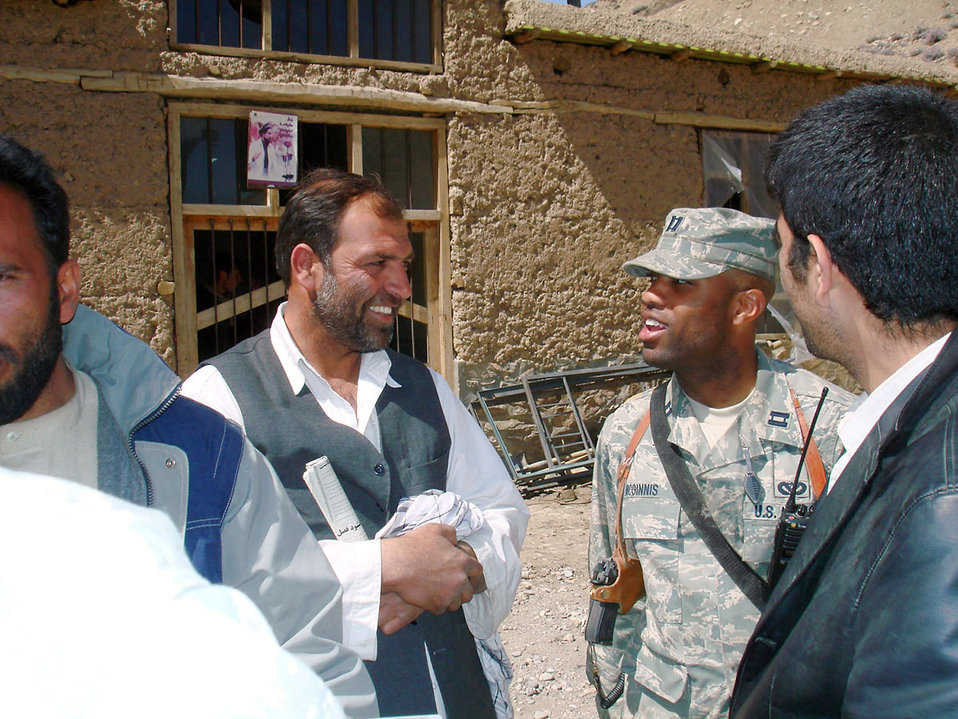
Air Force engineers are outside the wire every day

Capt. Kenneth McGinnis discusses foundation specifications for a schoolbook repository with the project's main contractor Haji Fada at the Khenj District Center April 1 in Afghanistan. The $220,000 building is expected to be complete in January 2009 and furthers one of the key tenets of the Panjshir Provincial Reconstruction Team mission -- governance. The captain is a PRT engineer.